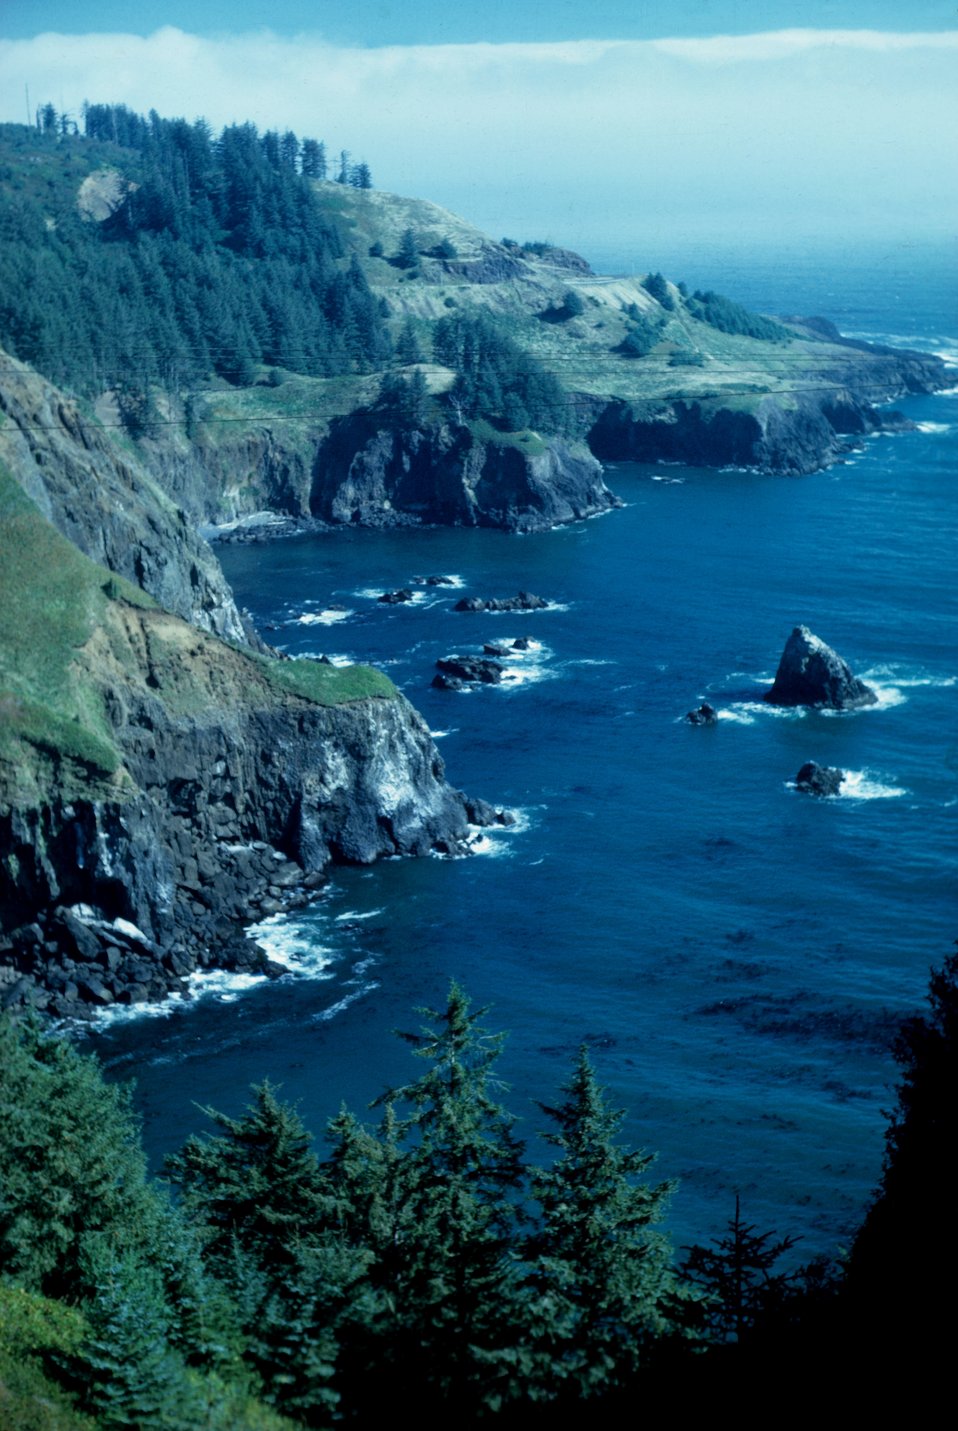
Somewhere along the Oregon or northern California coast.